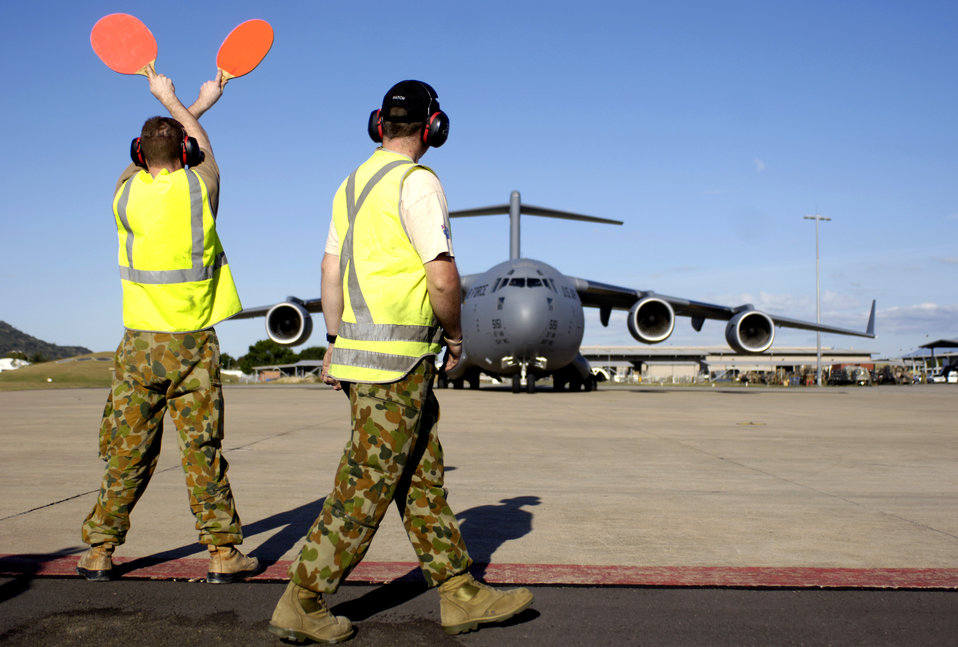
Combat Mobility Element moves cargo quickly, safely

Members of the Australian Air Force marshal a C-17 Globemaster III into a parking spot at Royal Australian Air Force Base Townsville, Australia, on Tuesday, May 30, 2006. Two C-17s from the 15th Airlift Wing and the Hawaii Air National Guard's 154th Wing at Hickam Air Force Base, Hawaii, are helping the Australian Defense Force reposition its forces in Australia to better support peace operations in East Timor.